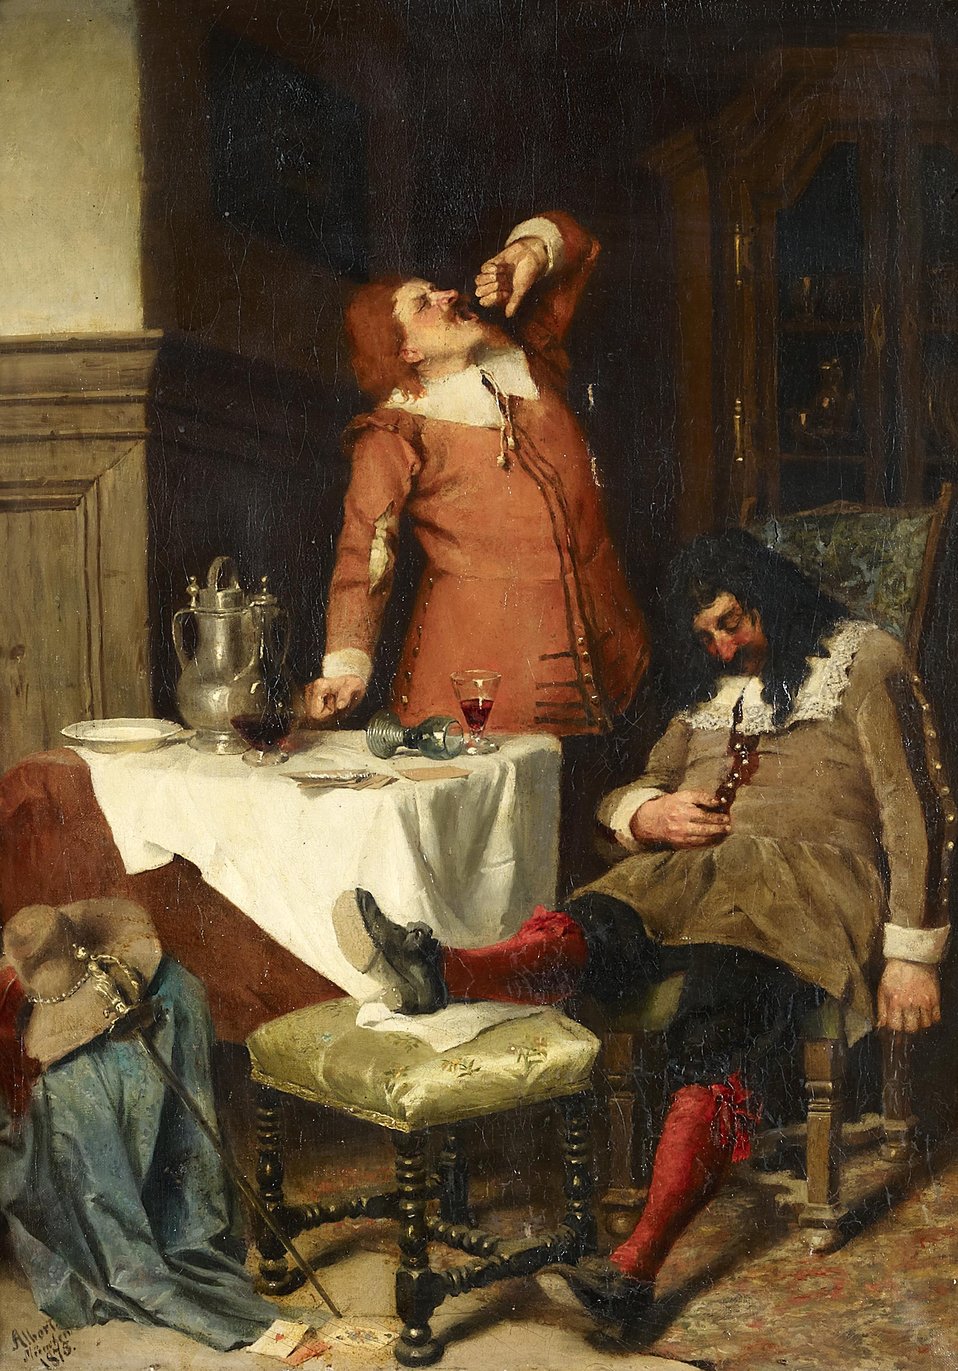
Zu später Stunde. Signiert und datiert unten links: Albert / München / 1875. Öl auf Leinwand. 88 x 64 cm